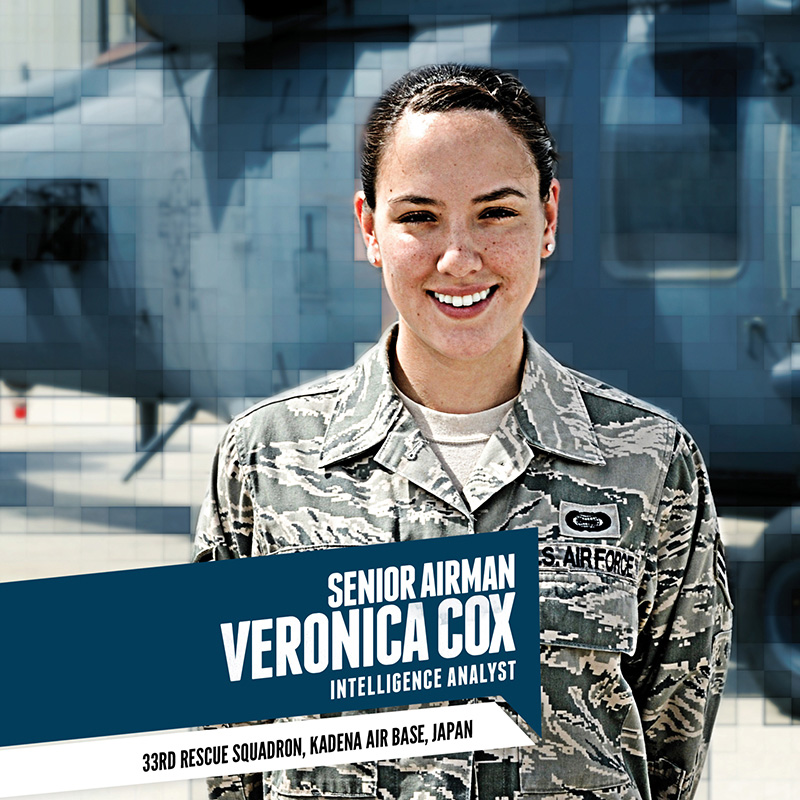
Portraits in Courage

Senior Airman Veronica Cox is profiled as one of 20 Airmen honored in